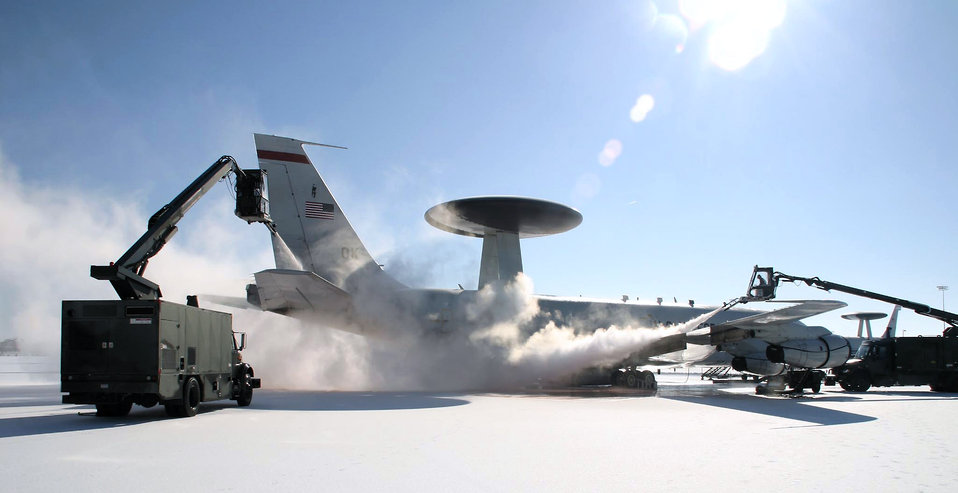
Snow blast!

Crews from the 552nd Air Control Wing de-ice an E-4 Sentry on the flight line at Tinker Air Force Base, Okla. The crews also had to clear the runways so they were suitable to use.